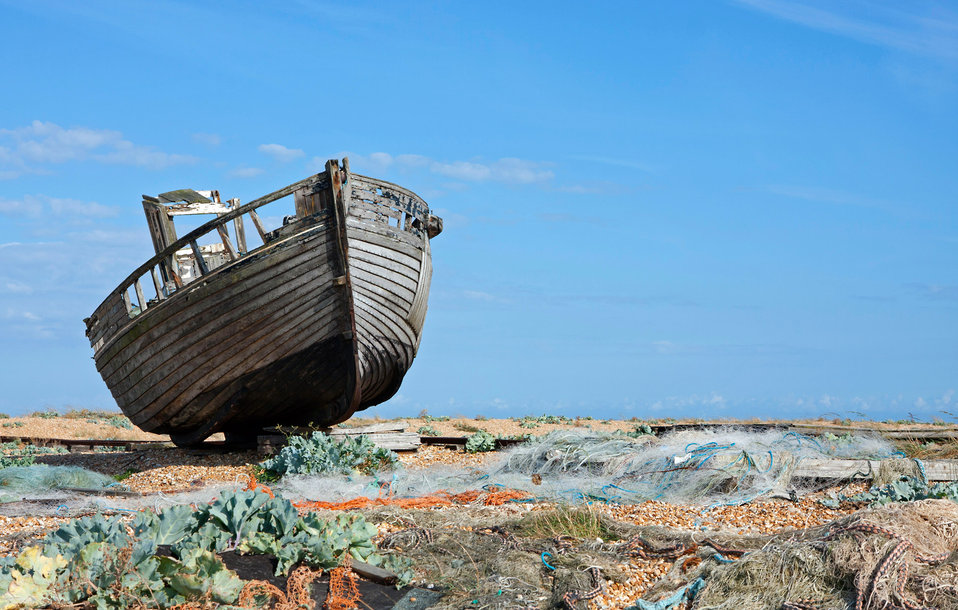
Wooden fishing boat

Broken, tatty wooden fishing boat against blue sky.